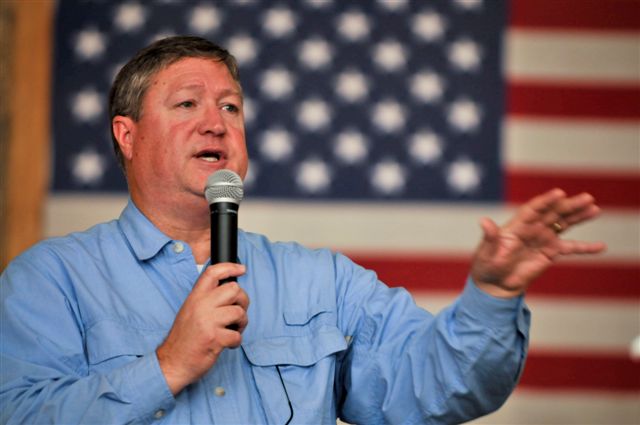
Secretary Donley visits Bagram Airmen

Secretary of the Air Force Michael B. Donley chats with Airmen Oct. 15 during his visit to Bagram Airfield, Afghanistan. He held an Airman's call to introduce himself to the Airmen and talk about the future of air power.